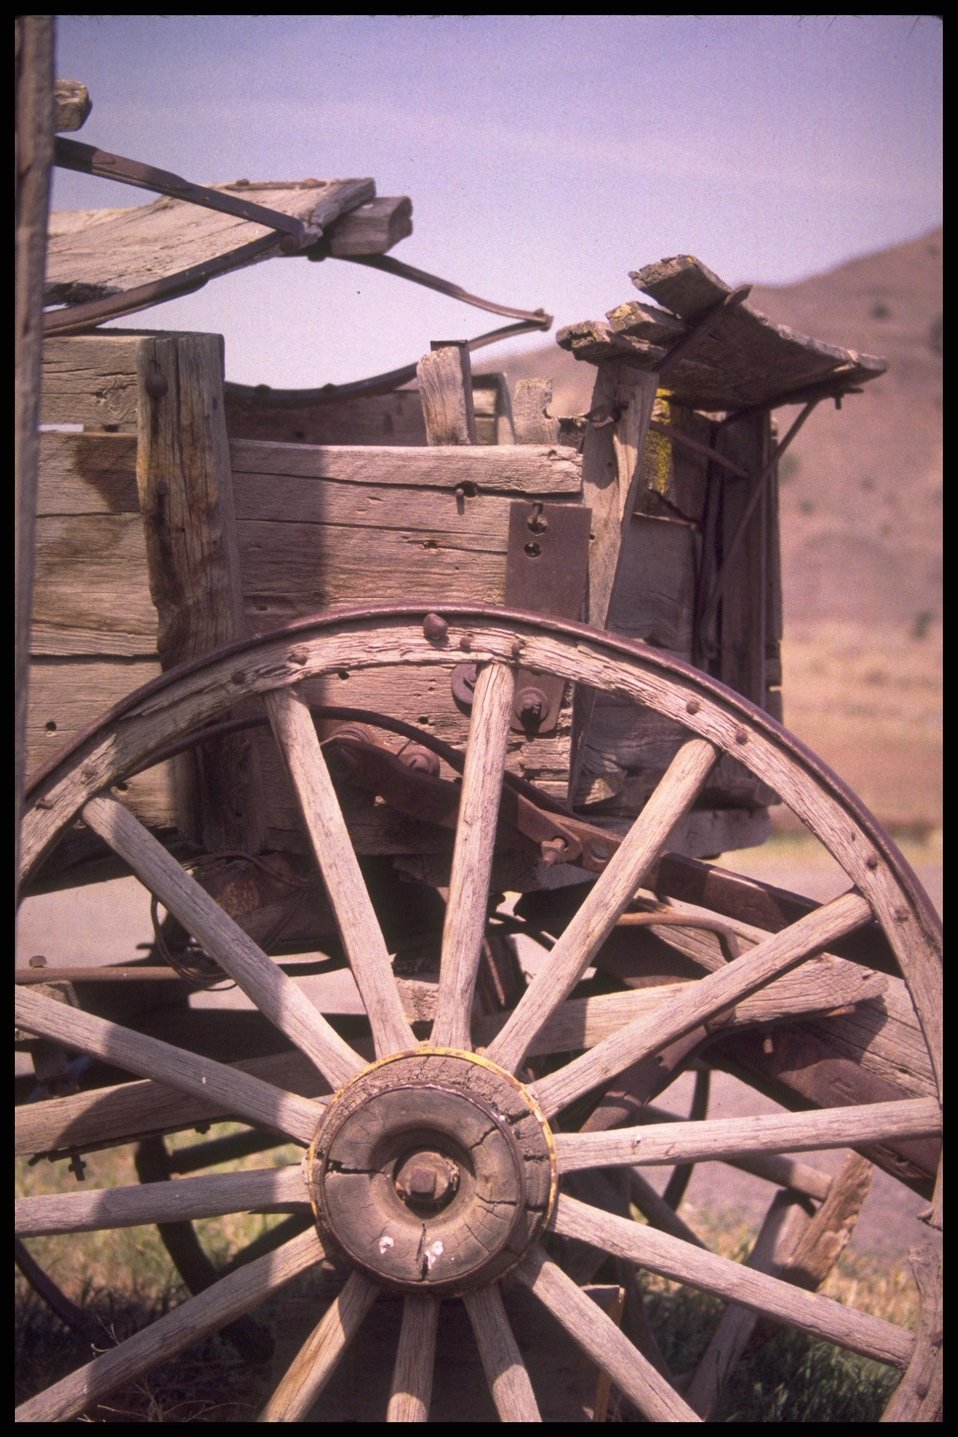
Wagon wheel, Shirk Ranch, Lakeview District.